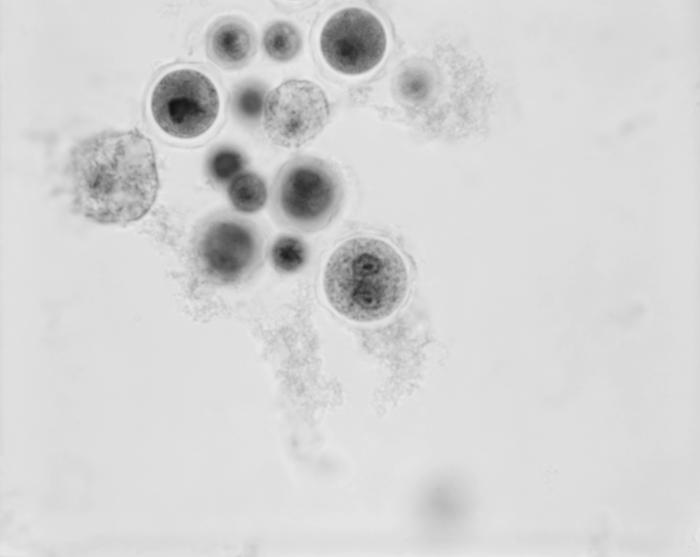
Magnified 1200X, and using a trichrome stain, this 1973 photomicrograph depicted a number of Hartmannella veriformis protozoan cysts. Note that these cysts are encased in a double-walled membrane, which consists of an inner, 'endocyst', and an outer-walled 'ectocyst'. The endocyst is intimately associated with the plasma membrane, while there is a distinct space between the endo- and outer, ectocyst membrances.